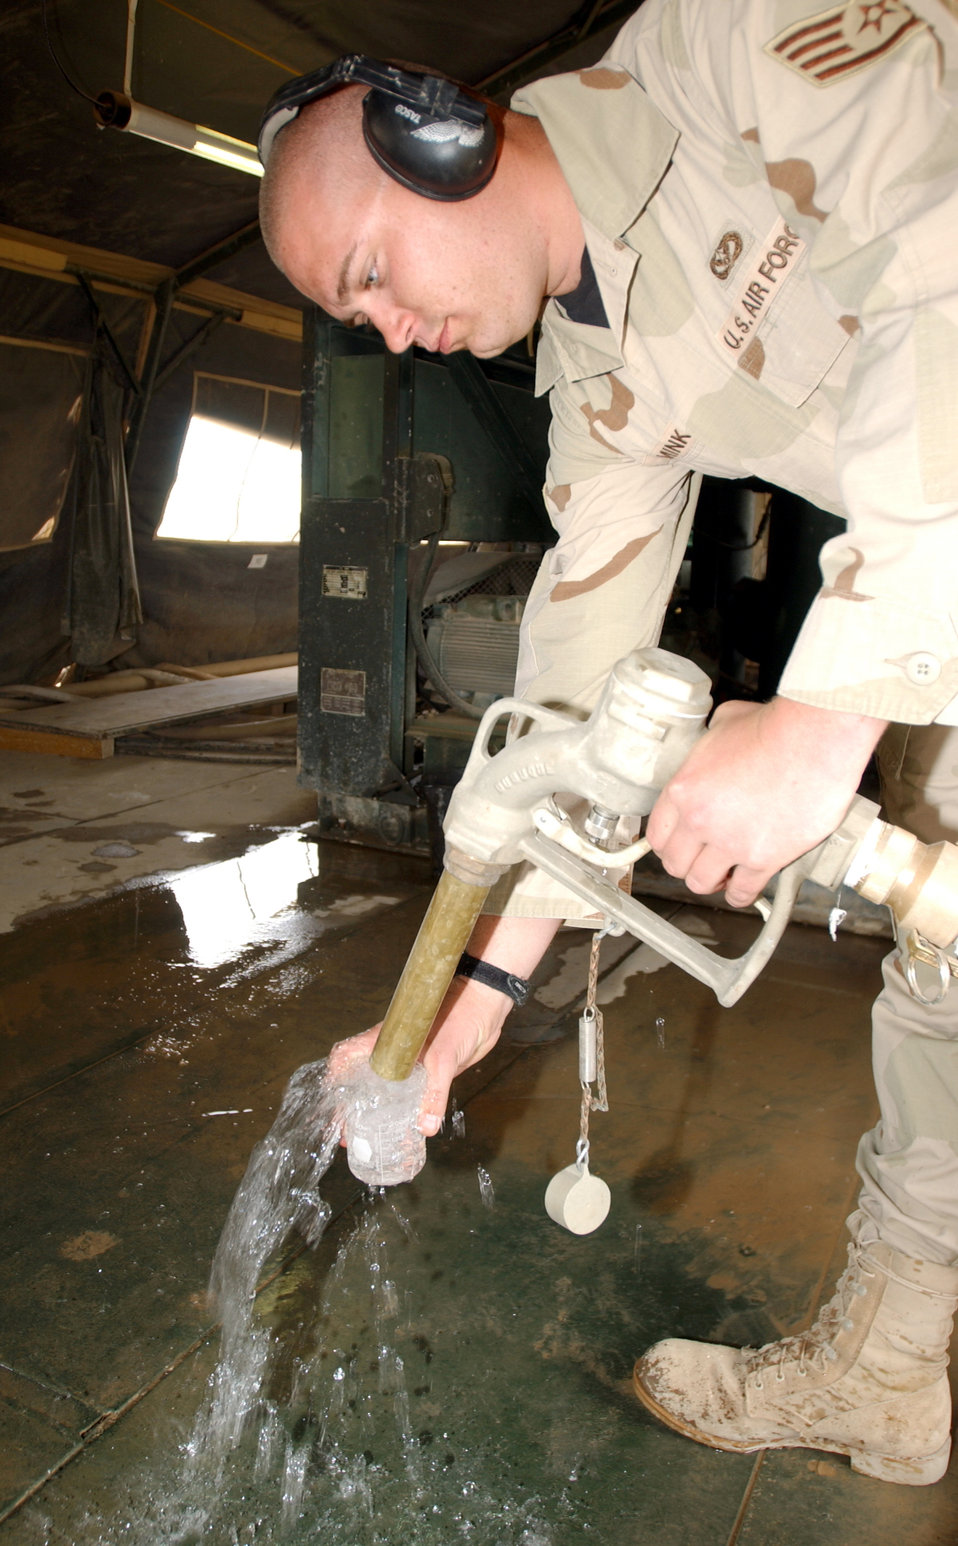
Pure unit

TALLIL AIR BASE, Iraq -- Staff Sgt. Anthony Minks tests a sample of water from the reverse osmosis water purification unit here April 15 in support of Operation Iraqi Freedom. Sergeant Minks is with the 407th Expeditionary Civil Engineer Squadron.